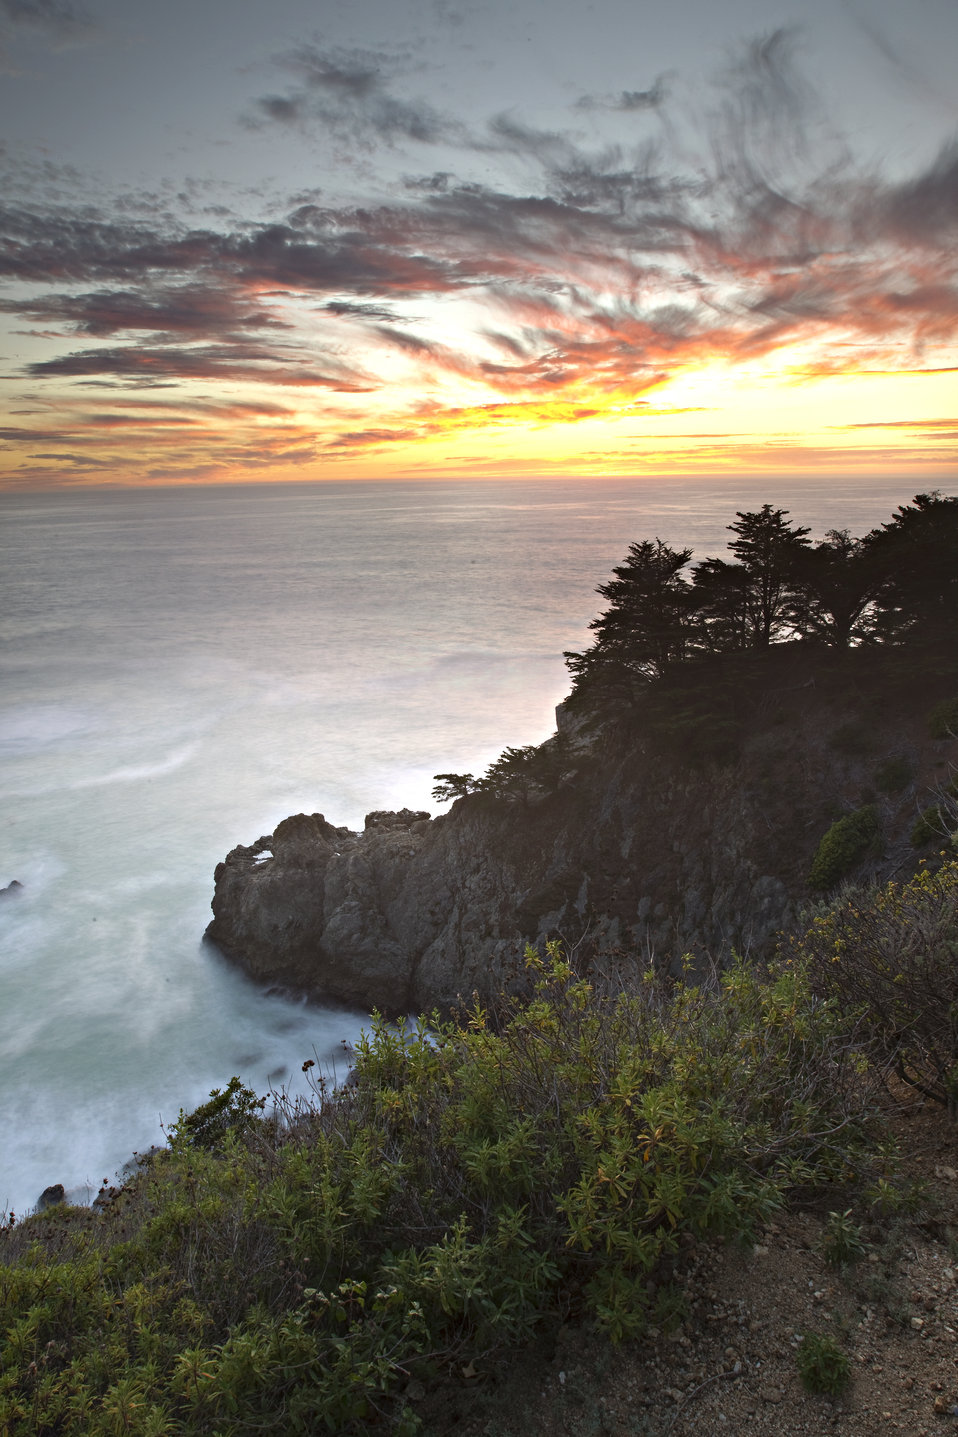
Central California Coast